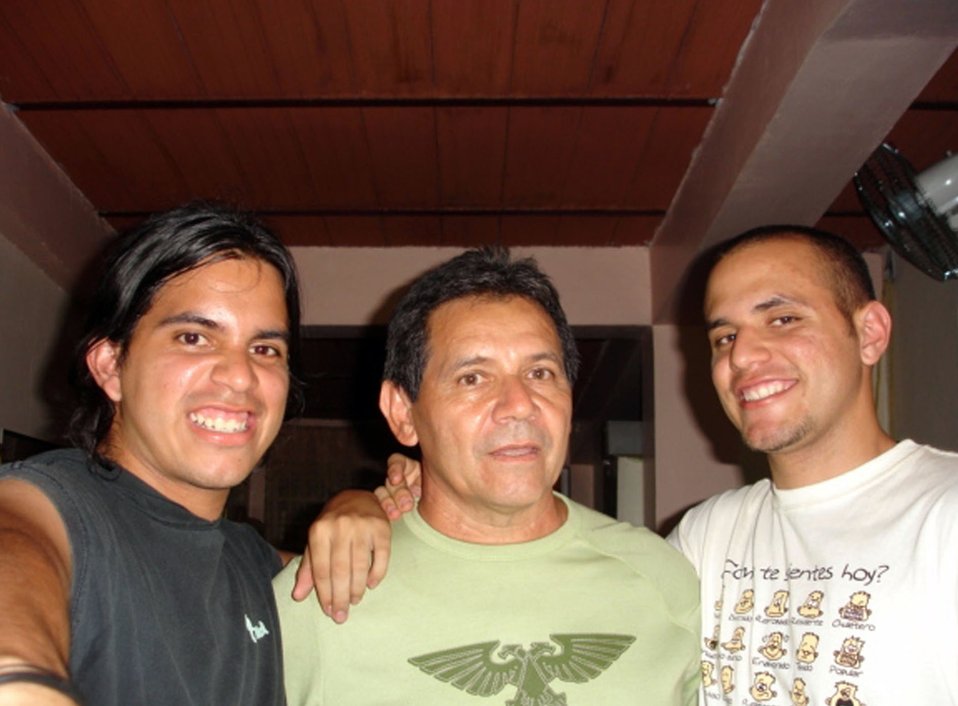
Venezuelan's dreams soaring to new heights in Air Force

Pictured July 2006, Airman 1st Class Edward Camacho (right) is all smiles following a surprise visit to his family home in Guacara, Venezuela. Two years earlier, his father Juan Vicente, (pictured in middle) gave Edward a one-way ticket and his entire 30-year pension in hopes the young man's dream of becoming an Air Force officer, pilot and ultimately an astronaut, might one day be fulfilled. The supply troop deployed from Aviano Air Base, Italy, to Balad AB's 332nd Expeditionary Logistical Readiness Squadron in Iraq, recently learned he was selected for the Air Force Academy's Preparatory School in Colorado. Pictured on left is Edward's brother, Bryant.